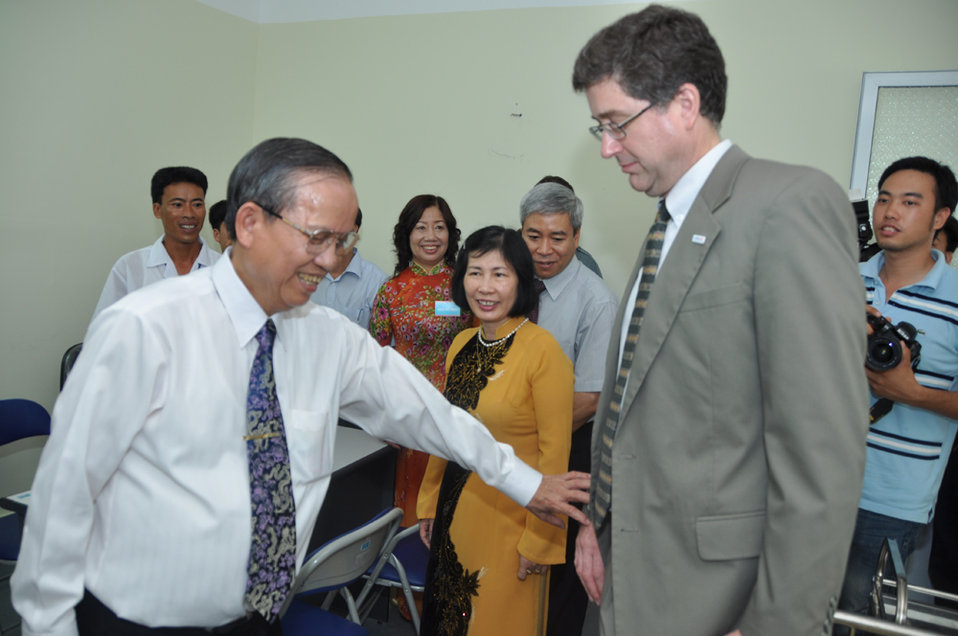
Co-pay Methadone Treatment Center Opens in Hai Phong on June 18, 2011

Deputy Prime Minister Truong Vinh Trong.